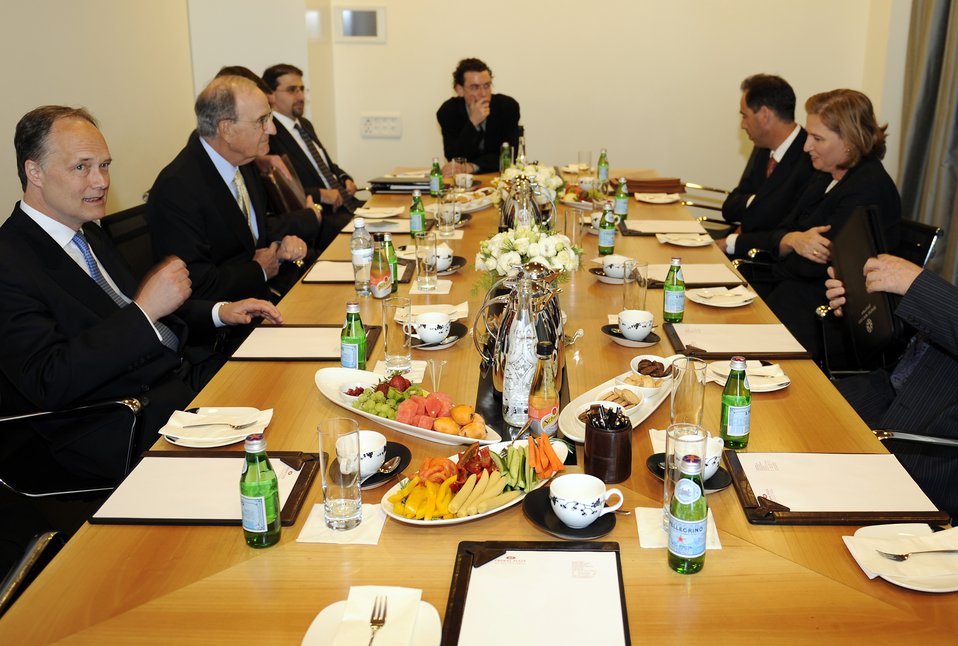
Special Envoy for Middle East Peace Meets With Israeli Leaders

Senator George Mitchell, Special Envoy for Middle East Peace meets with The Israeli Leader of the Opposition Tzipi Livni in Tel Aviv, Israel April 16, 2009.